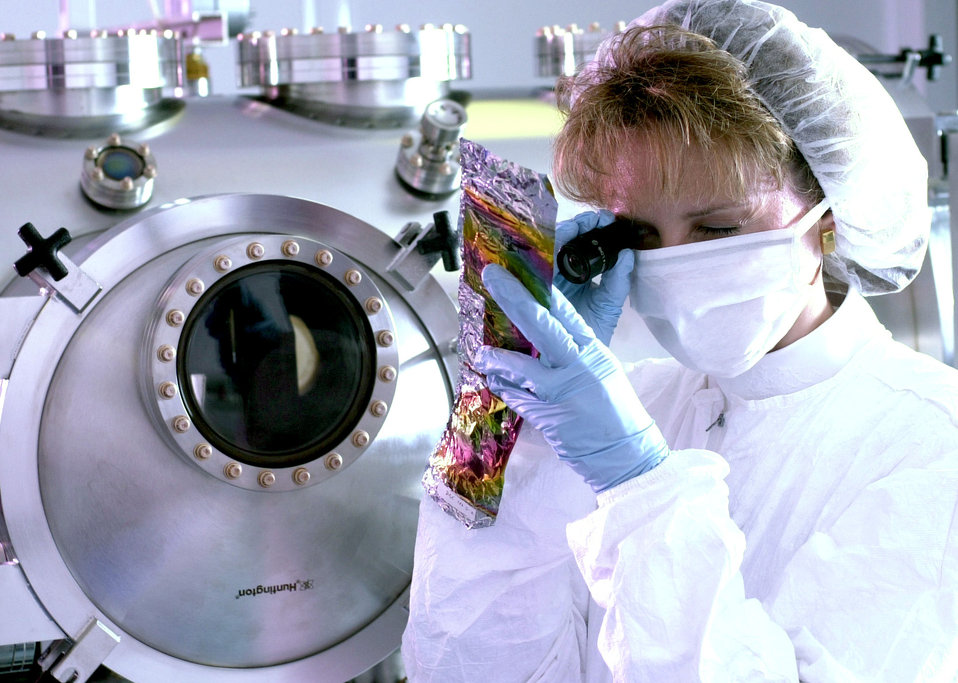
Propulsion team doubles capacitor capabilities

WRIGHT-PATTERSON AIR FORCE BASE, Ohio (AFPN) -- Sandra Fries-Carr analyzes the diamond-like carbon film deposited on foil in the Air Force Research Laboratory propulsion directorate's power division. The heat-resistant material is being developed for a wide variety of military applications from electrically driven aircraft accessories to pulse power applications like directed-energy weapons.